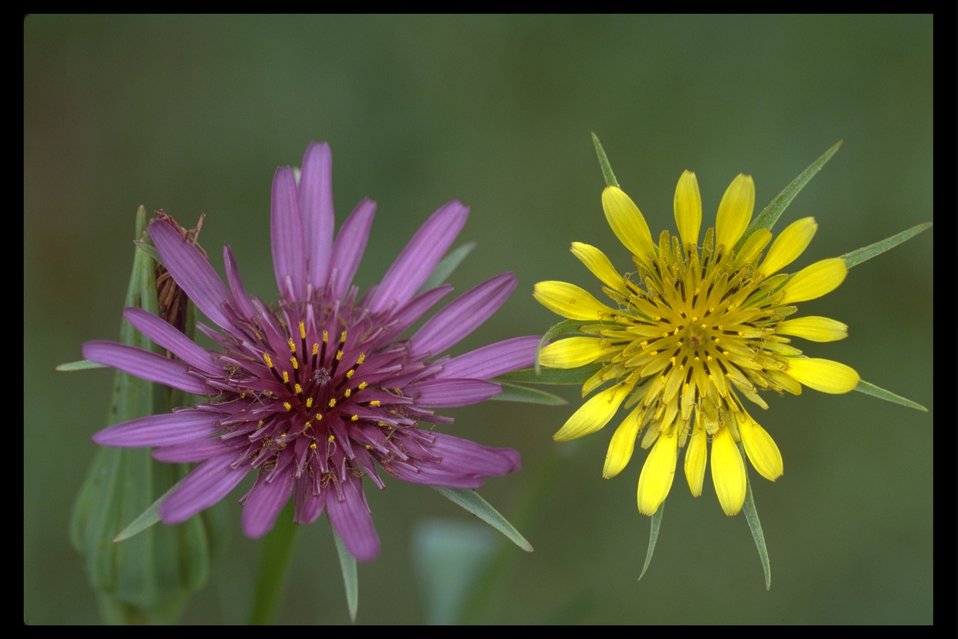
Western Salsify, also called the Oyster Flower (Tragopogon dubius = yellow) and Common Salsify, also called the Cornflower (Tragopogon porrifolius = purple) near Trail, Oregon.